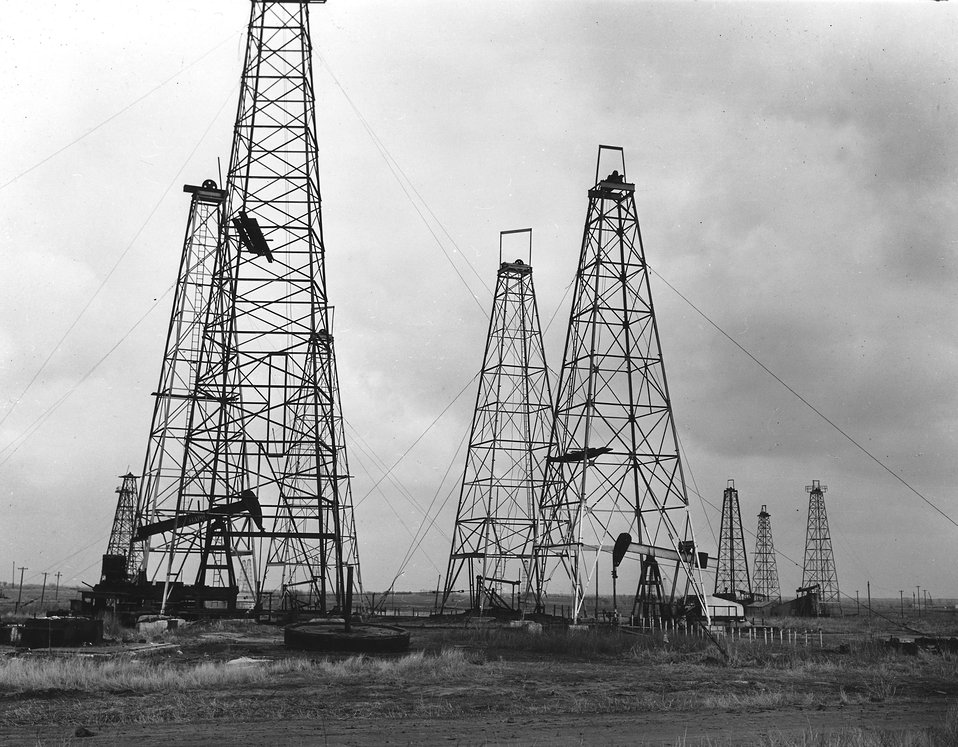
Standard Oil Co. Near Pawee, Oklahoma. Oil wells drilled close together without a spacing plan. c. undated